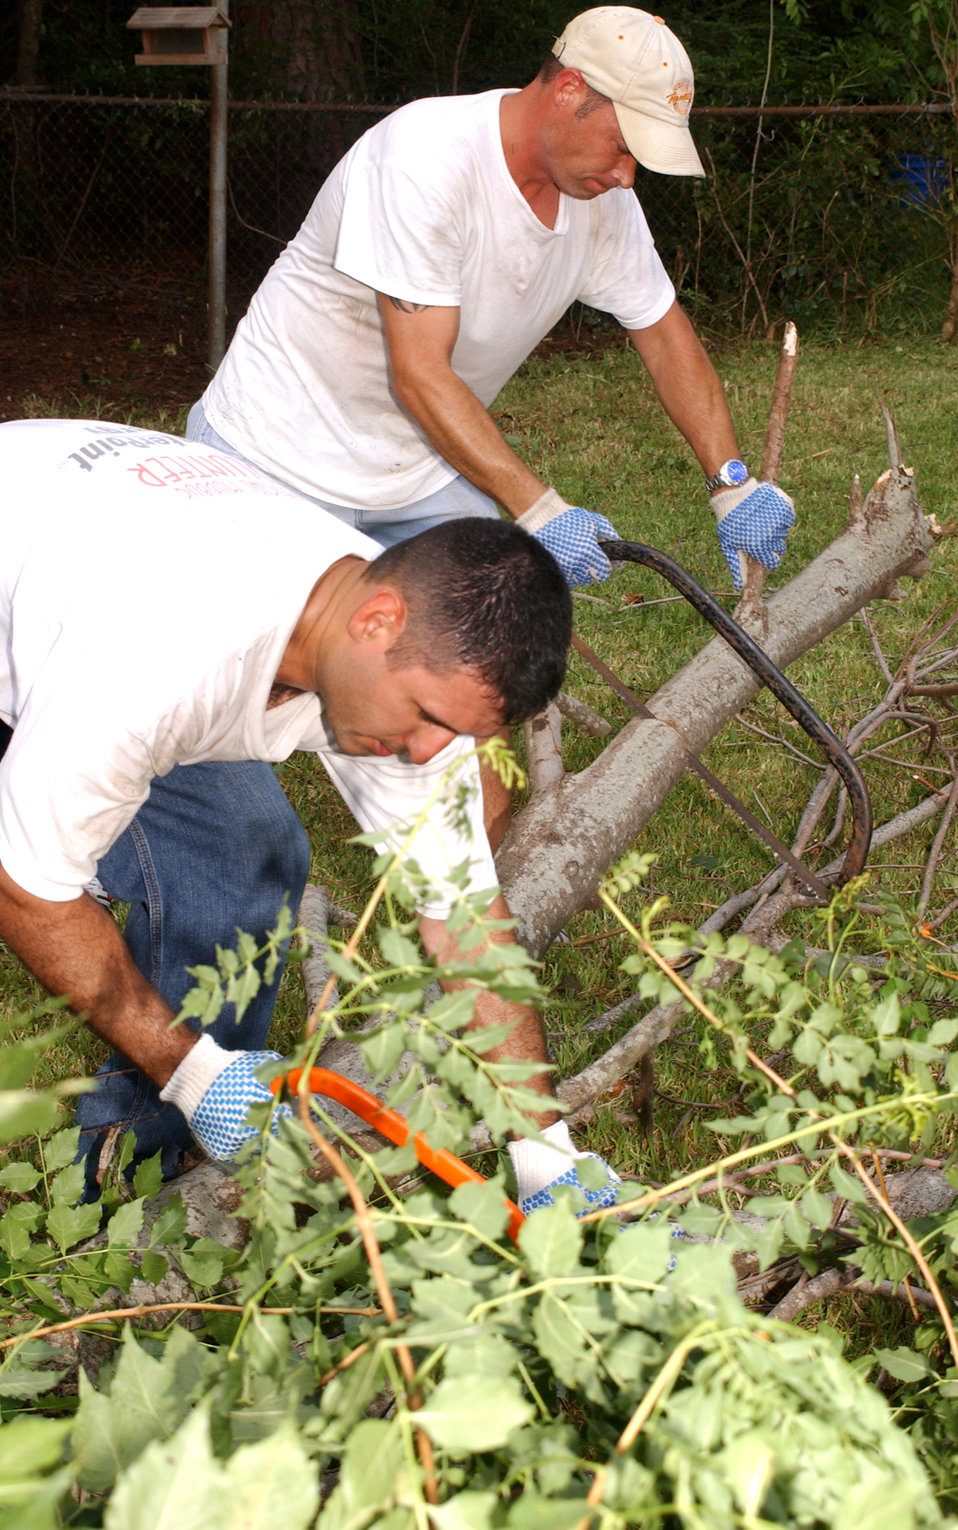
Keesler Air Force Base: One year after Katrina

Tech. Sgts. Angel Magallanez (left) and Greg Hensley remove a downed tree from Alice Schuler's yard in Biloxi. Mrs. Schuler's late husband, David, was an Air Force veteran. The project is part of continuing humanitarian relief operations in communities surrounding Keesler Air Force Base, Miss., since Hurricane Katrina. The NCOs are stationed at Barksdale Air Force Base, La., and are students at the Keesler NCO Academy.